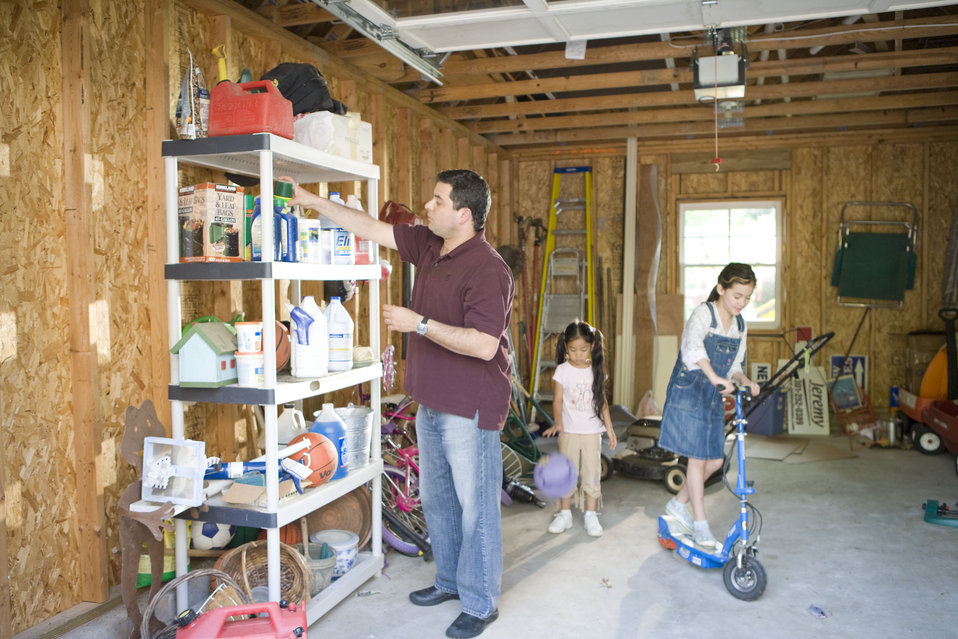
Here we see a father organizing his garage contents, while two of his children entertained themselves with some of the playthings stored inside.